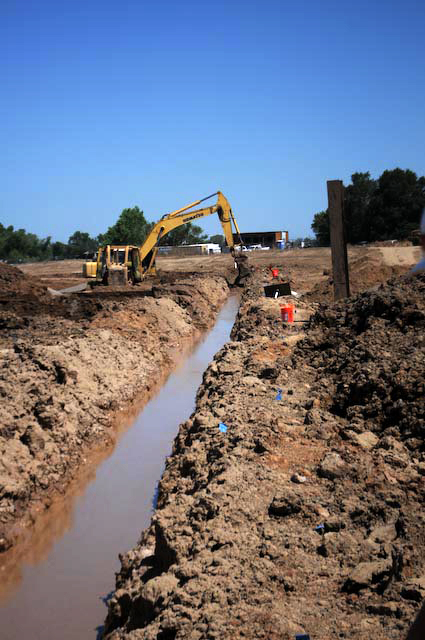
Corps digging deep to reduce West Sacramento flood risk

An excavator cleans out excess material from a seepage cutoff wall trench June 19, 2012, in West Sacramento, Calif. The Corps is installing a 75-foot-deep seepage cutoff wall along more than 2,200 feet of levee as part of the Sacramento River Bank Protection Project, a joint effort with the Central Valley Flood Protection Board to strengthen levees along the Sacramento River and its tributaries.